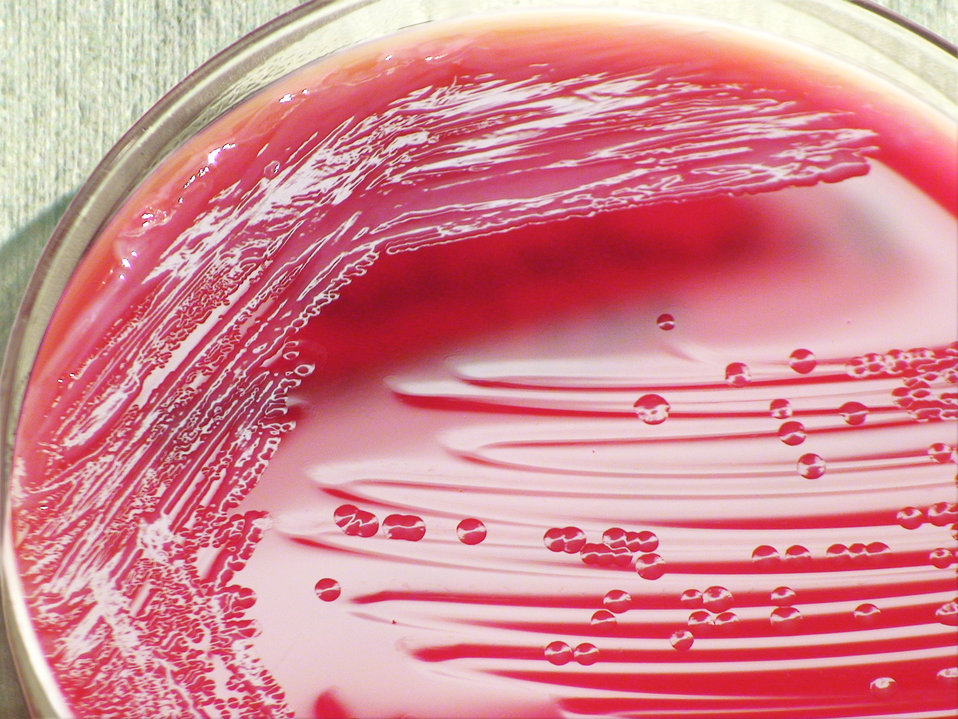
As a closer view of PHIL 12435, this photograph depicts the colonial morphology displayed by what was formerly known as Gram-negative Enterobacter agglomerans, and has since been renamed, Pantoea agglomerans bacteria, which was grown on a medium of sheep's blood agar (SBA), for a 24 hour time period, at a temperature of 37�C.